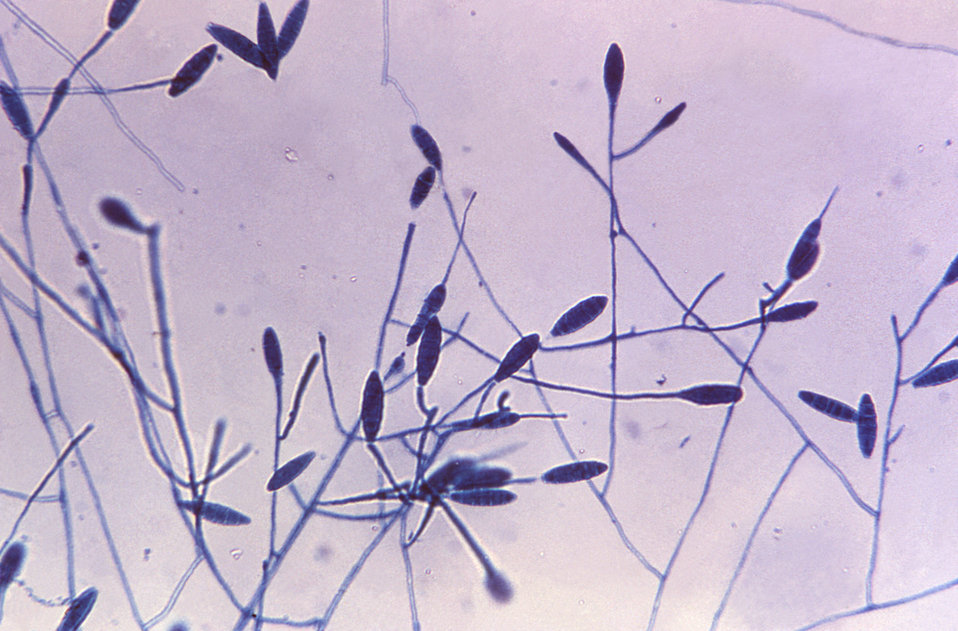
Magnigied 240X, this photomicrograph shows the spindle-shaped macroconidia of the fungus Microsporum gypseum.